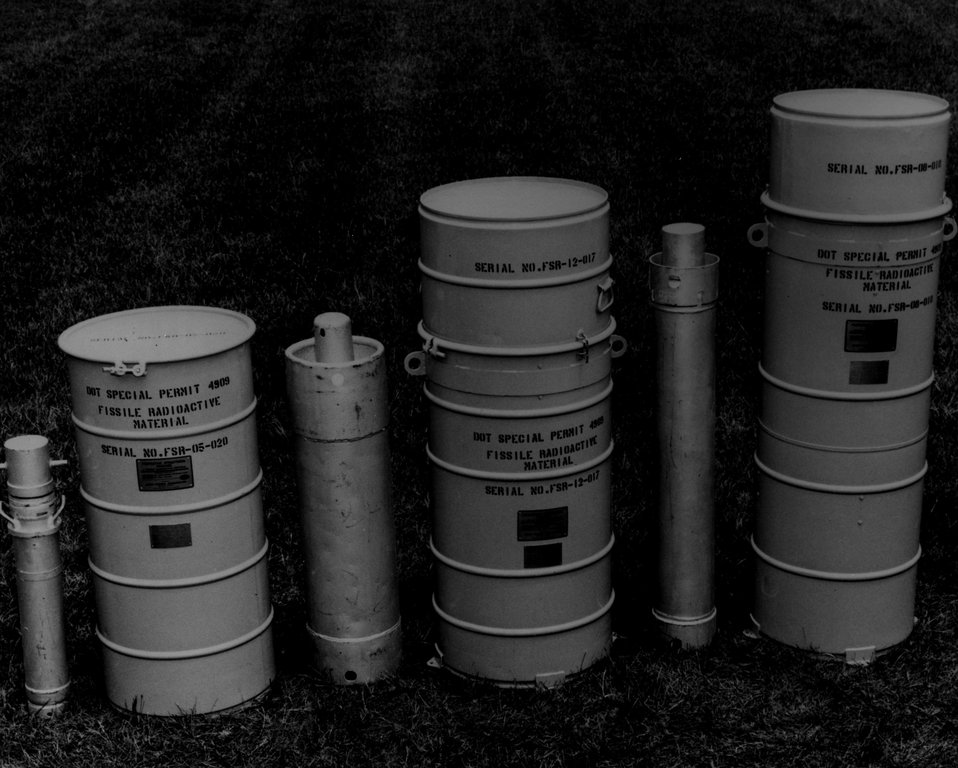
As nuclear fuel cycle activities continue to expand, research and development on packaging and the safe transportation of nuclear materials continues. This photo shows several protective shipping packages for UF6 cylinders. These packages and their high temperature phenol resin foam insulation were developed at the Oak Ridge Gaseous Diffusion Plant to meet ERDA and Department of Transportation (DOT) requirements. c. 1971